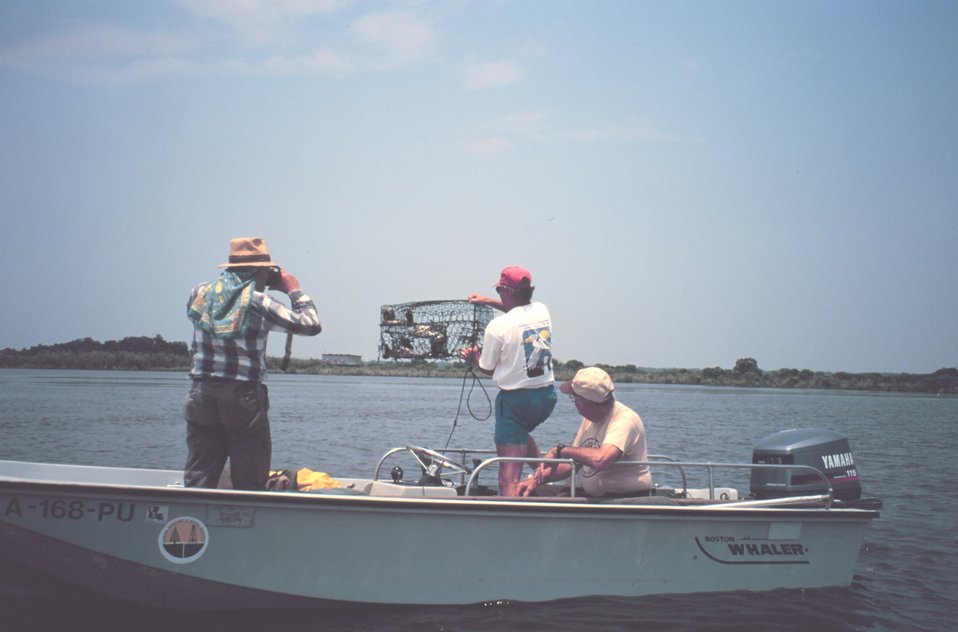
Louisiana Department of Natural Resources scientist observing crab catch.